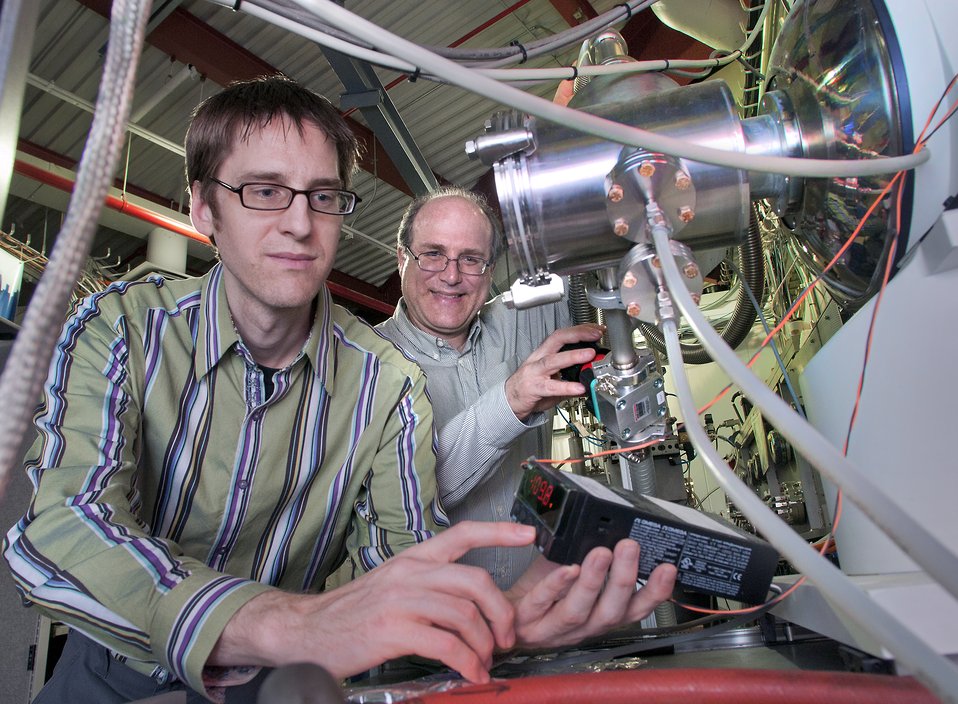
BNL developed a new and strikingly simple x-ray scattering technique-detailed February 2013 issue of the Journal of Applied Crystallography help draw nanomaterials ranging from catalysts to proteins into greater focus.
A serendipitous discovery at Brookhaven's National Synchrotron Light Source (NSLS) led to the development of a breakthrough imaging technique called Grazing-Transmission Small Angle X-ray Scattering (GTSAXS). The new method requires considerably less correction and a much simpler analysis, resulting in superior images with profound implications for future advances in materials science.